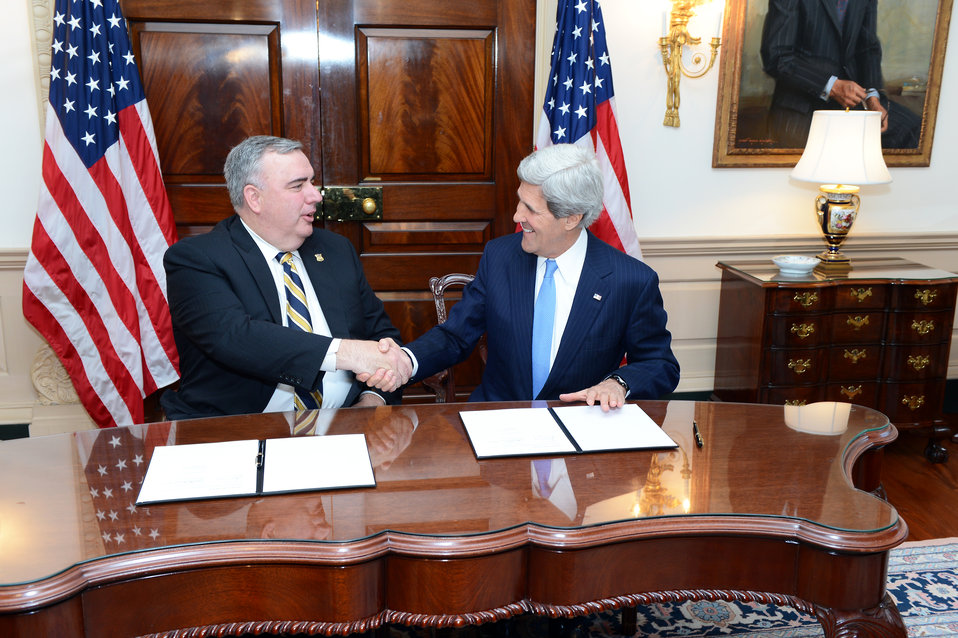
Secretary Kerry and Boston Police Commissioner Davis Shake Hands

U.S. Secretary of State John Kerry and Boston Police Commissioner Edward Davis shake hands after signing a Memorandum of Understanding to increase cooperation aimed at building foreign law enforcement capacity at the U.S. Department of State in Washington, D.C., on May 13, 2013. The Boston Police Department has a long history of promoting partnerships in both the public and private sectors to reduce violence and strengthen public safety initiatives. Plans for this new partnership predate the marathon bombings in the Secretary's hometown.